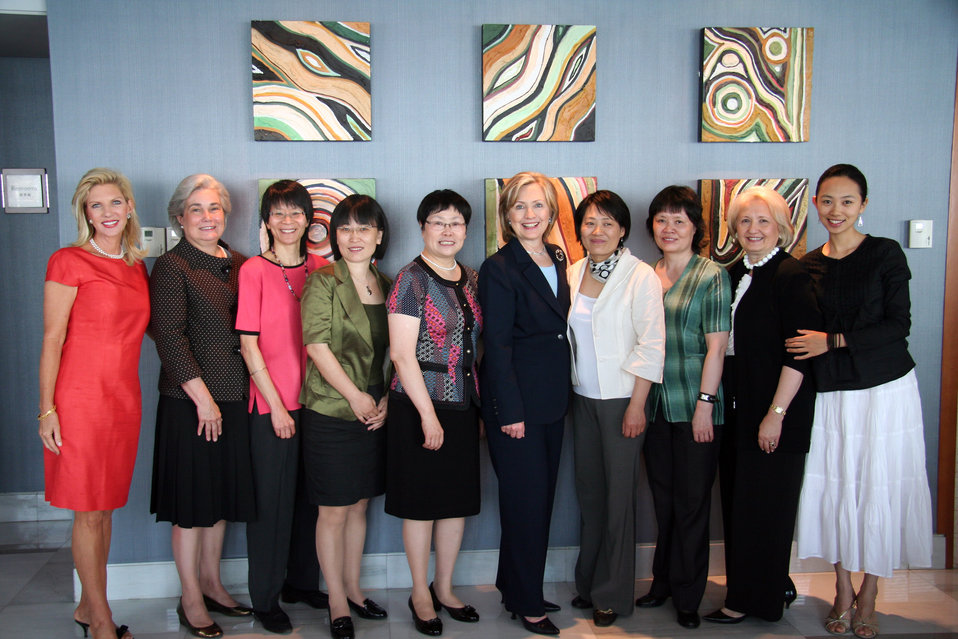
Secretary Clinton Meets With Chinese Women Civil Society Leaders

U.S. Secretary of State Hillary Rodham Clinton meets with Chinese Women Civil Society Leaders in Beijing, China, May 26, 2010. From left to right: Mary Kaye Huntsman, wife of the U.S. Ambassador to China; Susan O'Sullivan, Senior Advisor, State/DRL; Phyllis Chang, U.S. lawyer working in China; Li Ying, Qian Qian law firm; Xie Lihua, Rural Women NGO; Secretary Clinton; Guo Jianmei, Qian Qian law firm; Li Xiaoxing, All China Women's Federation; U.S. Ambassador at large for Global Women's Issues Melanne Verveer; Guo Jianmei's daughter.